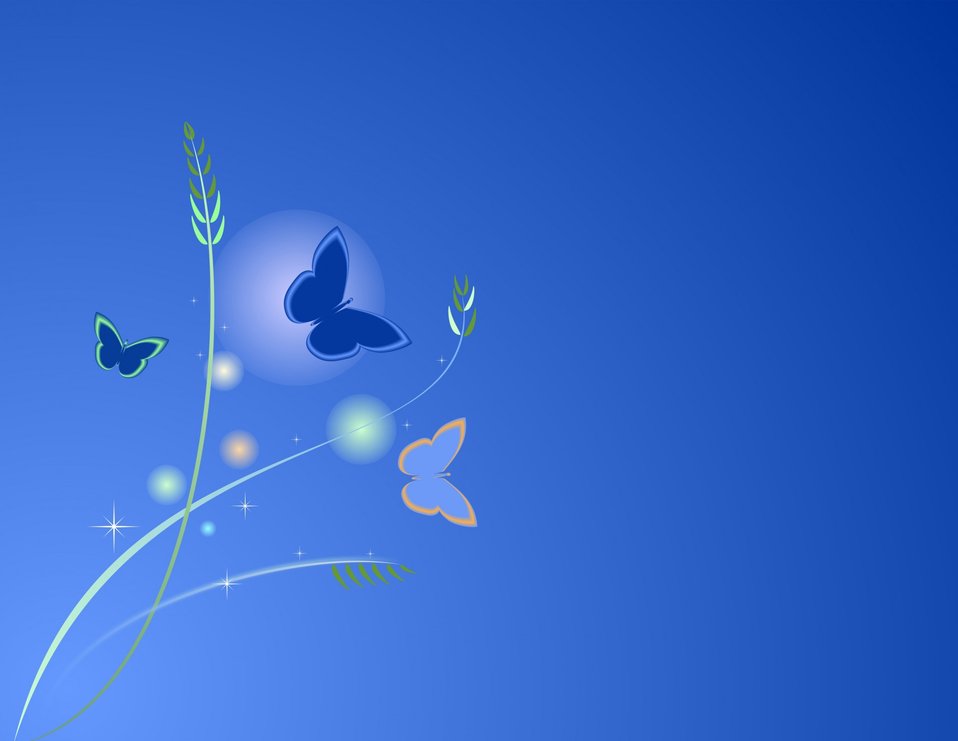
Abstract background with butterflies

Blue abstract background with butterflies.